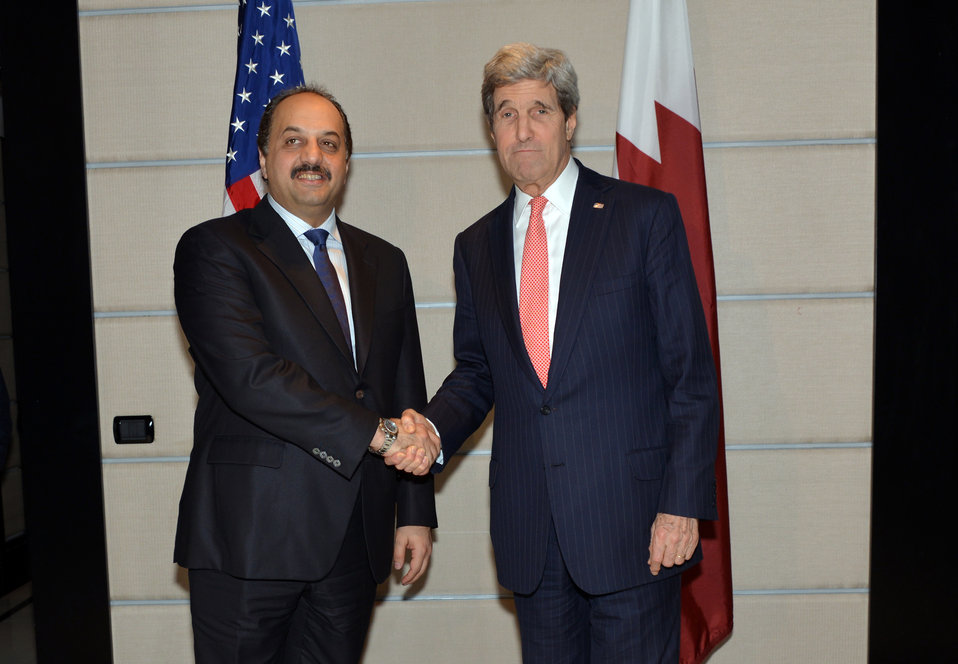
Secretary Kerry Meets With Qatari Foreign Minister Al Attiya

U.S. Secretary of State John Kerry meets with Qatari Foreign Minister Al Attiya on the sidelines of meetings on Libya and Ukraine in Rome, Italy, on March 6, 2014.